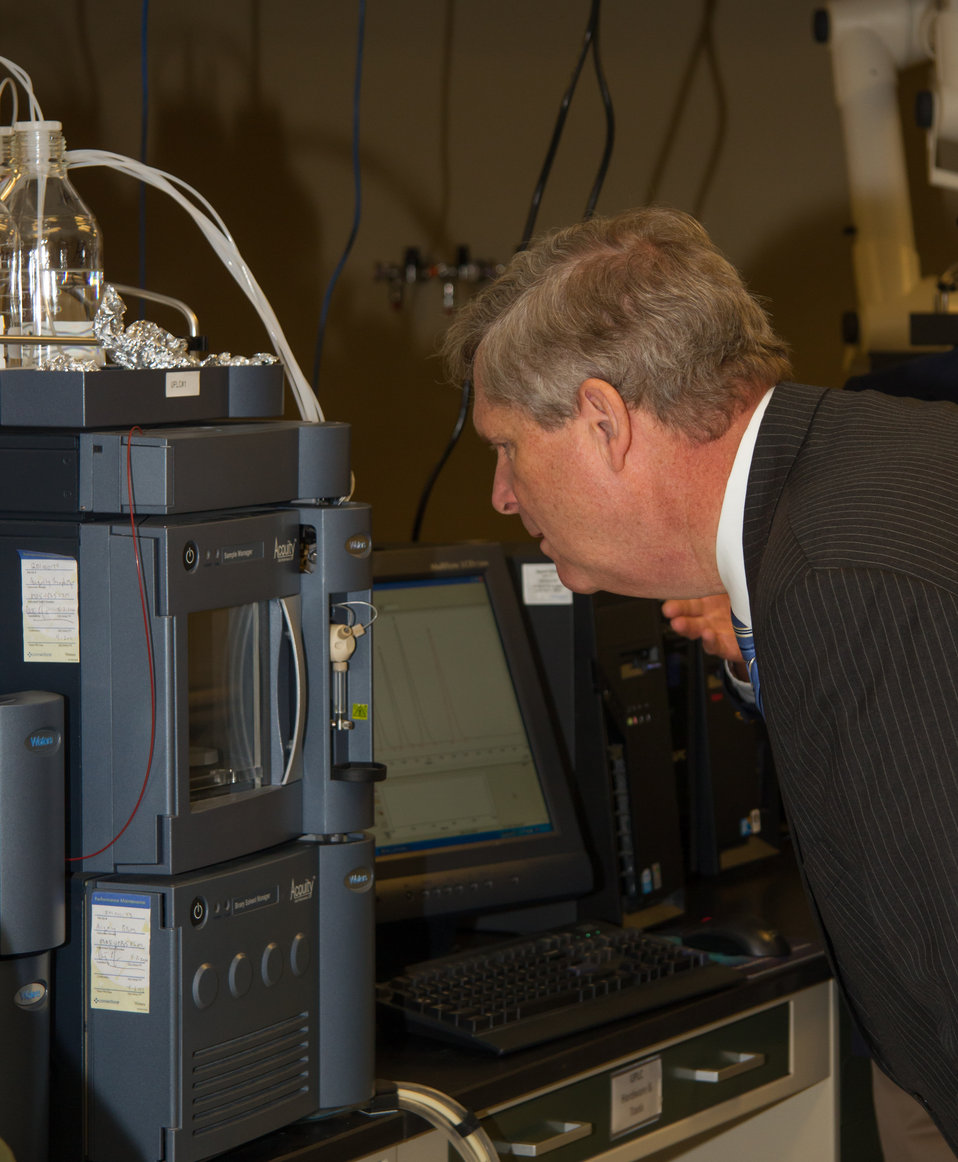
Agriculture Secretary Tom Vilsack inspects one of the state-of-the-art High Performance Liquid Chromatography instruments in Grain Inspection, Packers and Stockyards Administration (GIPSA), Analytical Chemistry Branch laboratories in Kansas City, MO, on Wednesday, Oct. 23, 2013.